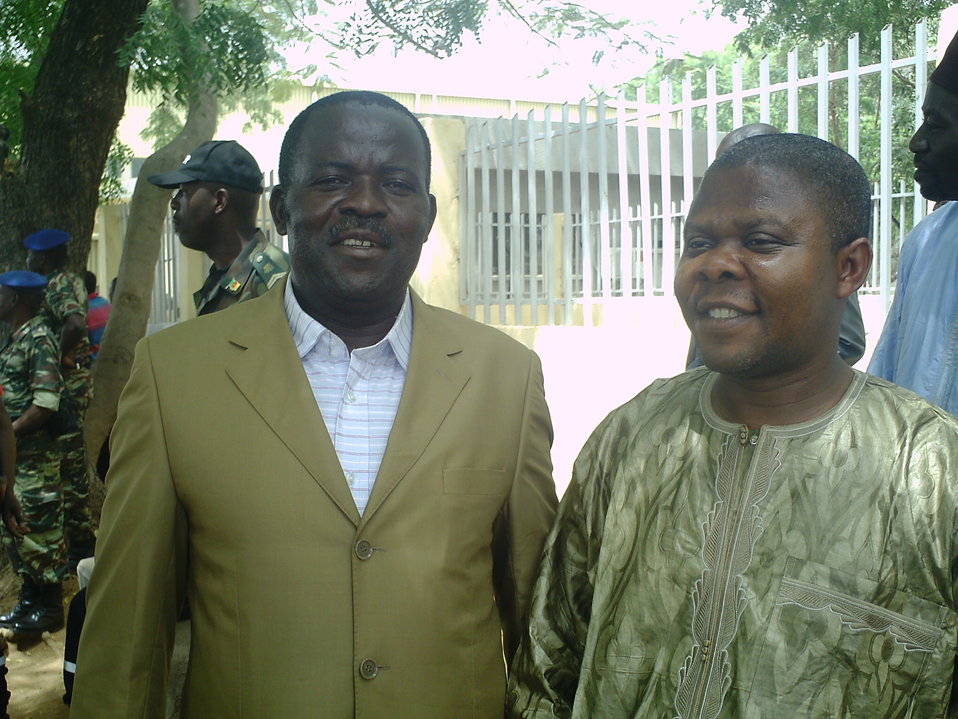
Garoua Defense Base in Cameroon. Conservator of Bouba Ndjida National Park meets with a representative from World Wildlife Fund.